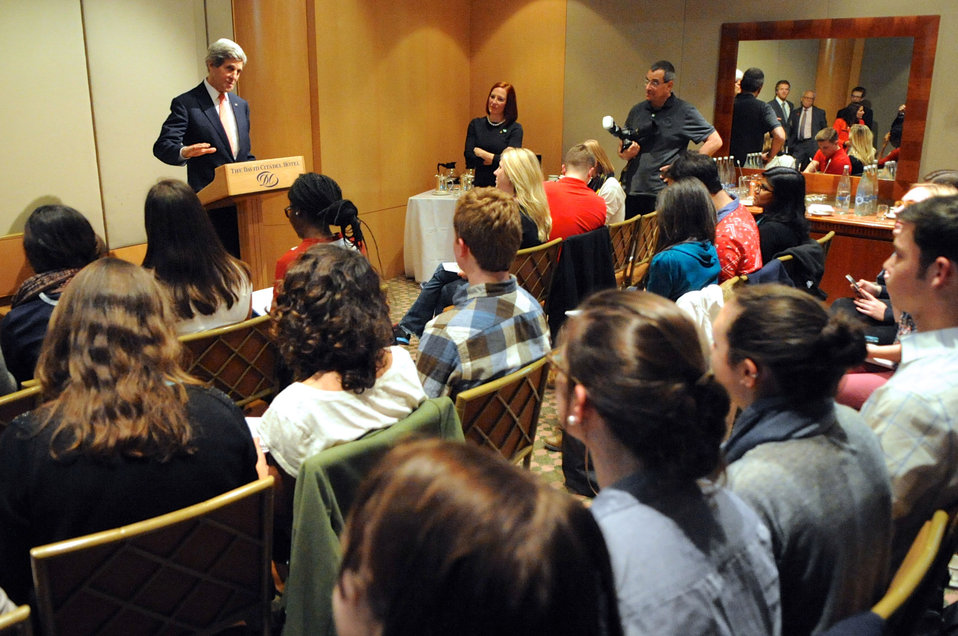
Secretary Kerry Addresses U.S. College Newspaper Editors in Jerusalem

U.S. Secretary of State John Kerry addresses a group of U.S. college newspaper editors attending an American Jewish Committee seminar in Jerusalem as he traveled between Israel and the West Bank on January 3, 2014, to engage in Middle East peace talks.